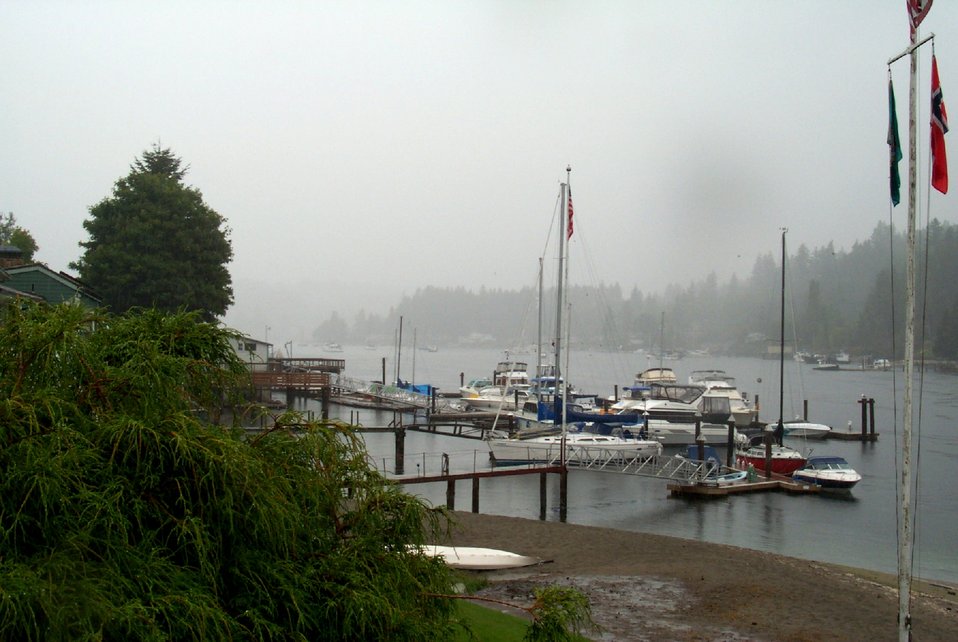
A rainy day inside of Gig Harbor.